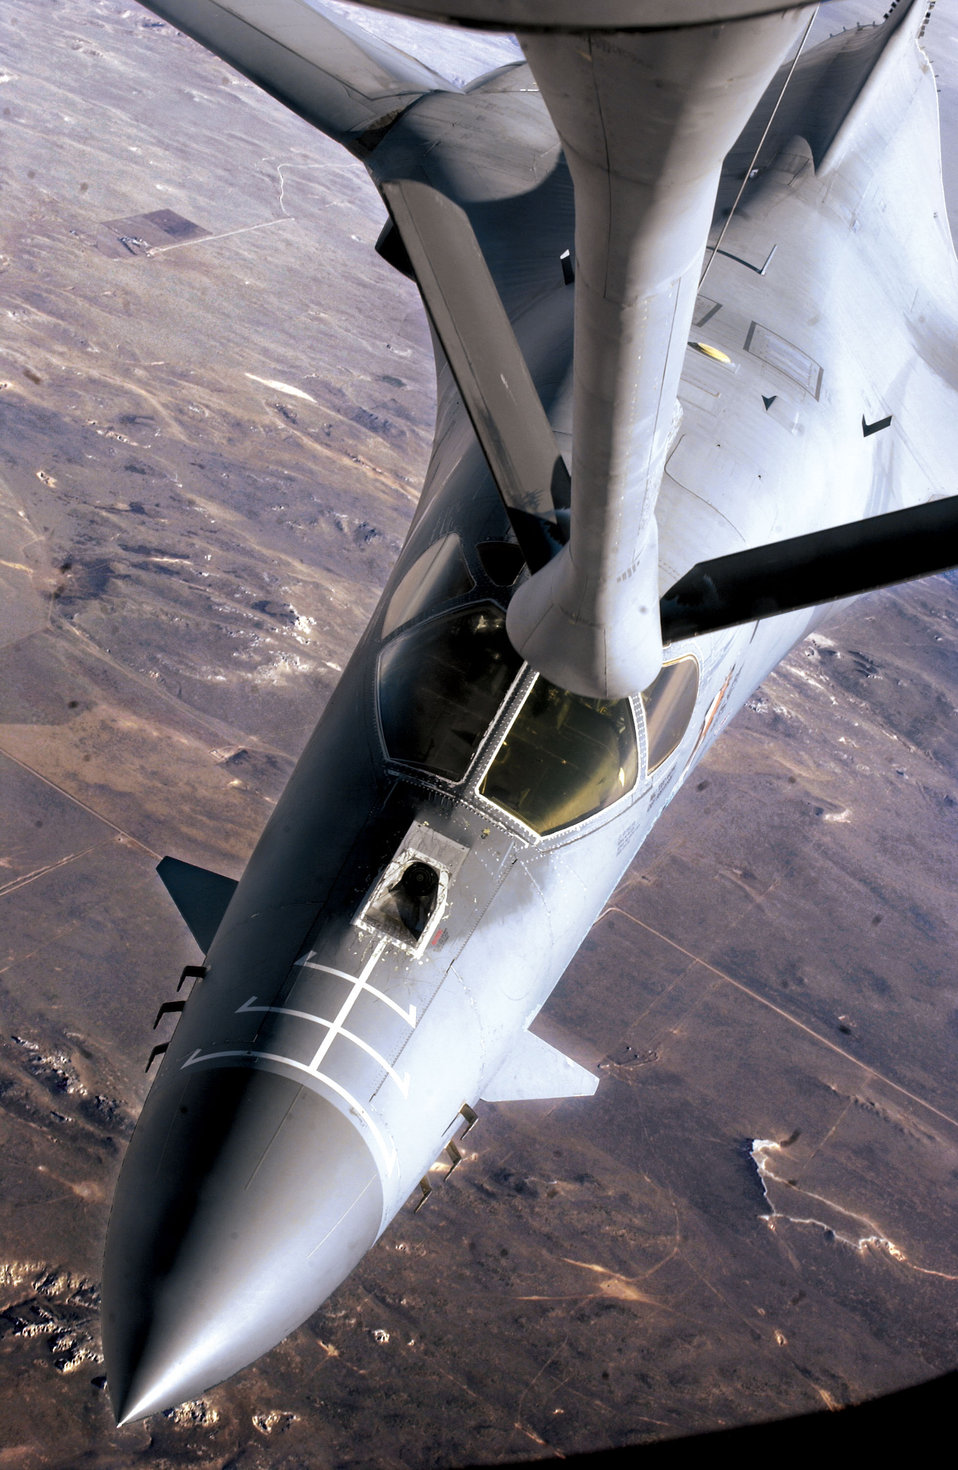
Bomber meets boomer

GRAND FORKS AIR FORCE BASE, N.D. -- A B-1 Lancer from Ellsworth Air Force Base, S.D., negotiates its way to an aerial refueling boom of a KC-135 Stratotanker from the 905th Air Refueling Wing based here.